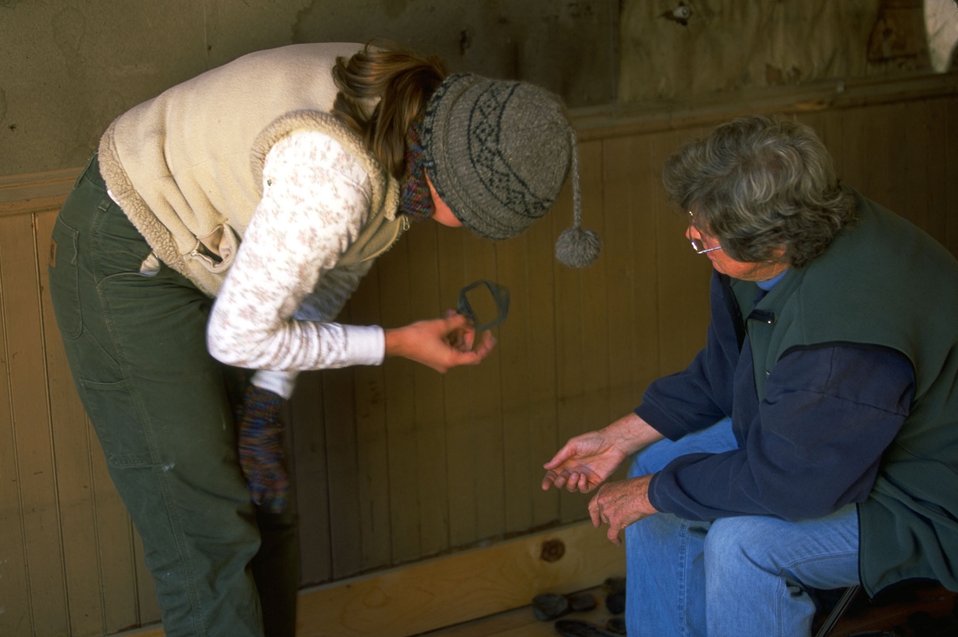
Looking at historic artifact inside a building at Garnet Ghost Town